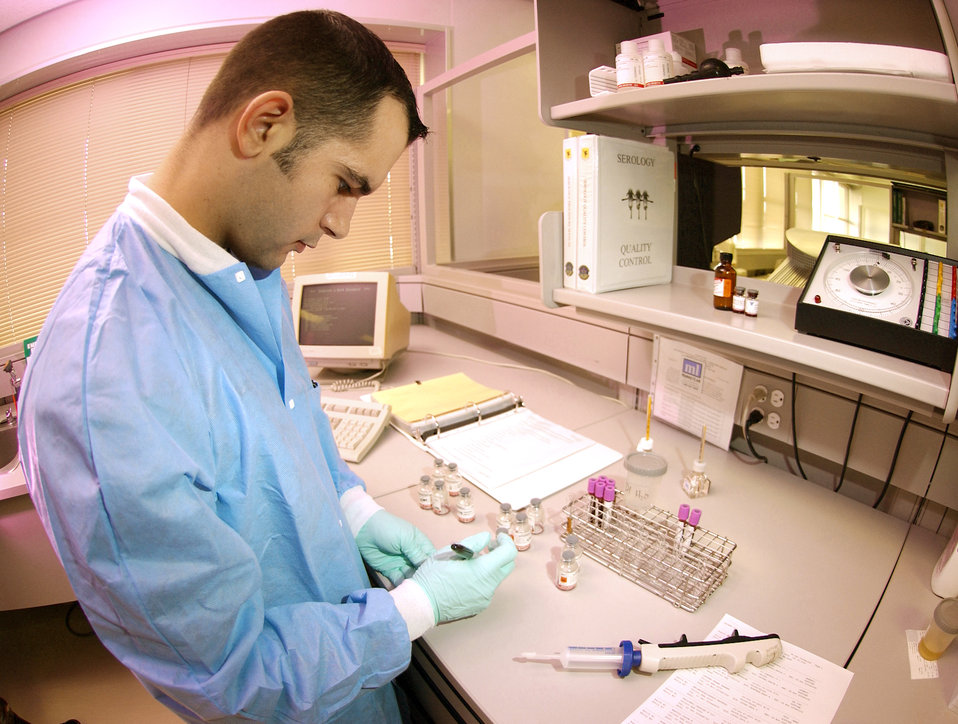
Lab work

KADENA AIR BASE, Japan. --- Airman 1st Class Jason Garrett prepares a lab sample in the hospital laboratory here Dec. 13. Airman Garrett is assigned to the 18th Medical Group.